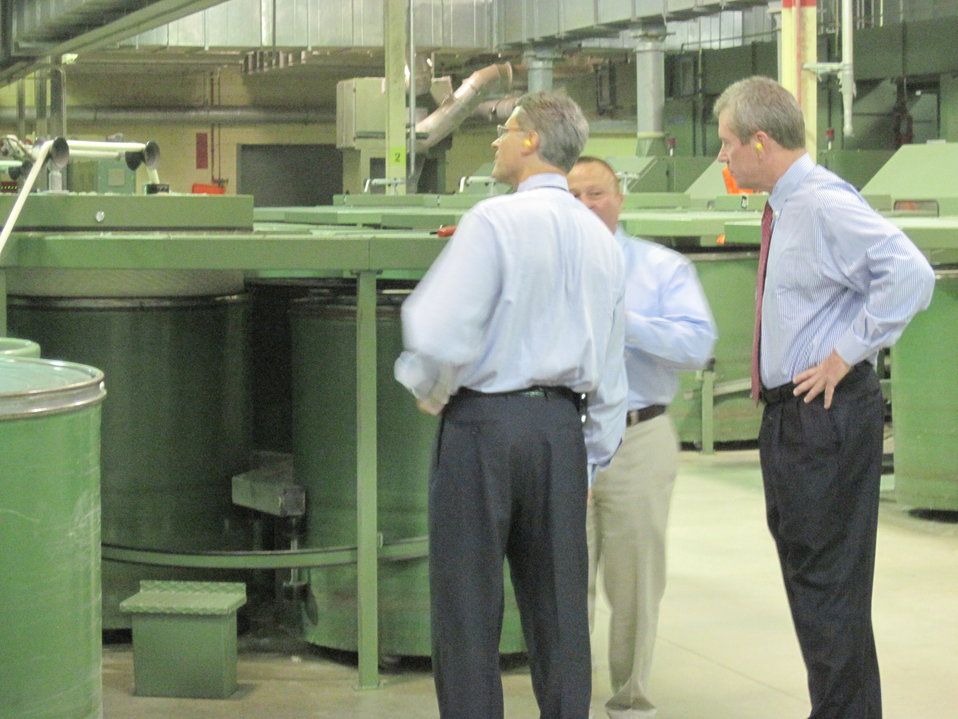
Krueger in NC, 7/12/10

Assistant Secretary for Economic Policy and Treasury Chief Economist Alan Krueger touring a newly reopened Parkdale Mills plant with Congressman Bob Etheridge (NC-2) and Andy Warlick, President and CEO of Parkdale Mills. Parkdale Mills yarn manufacturer recently reopened a plant in Sanford and has already hired more than 30 workers who are eligible for HIRE Act tax exemptions, a number that will likely grow as they continue to add more workers.